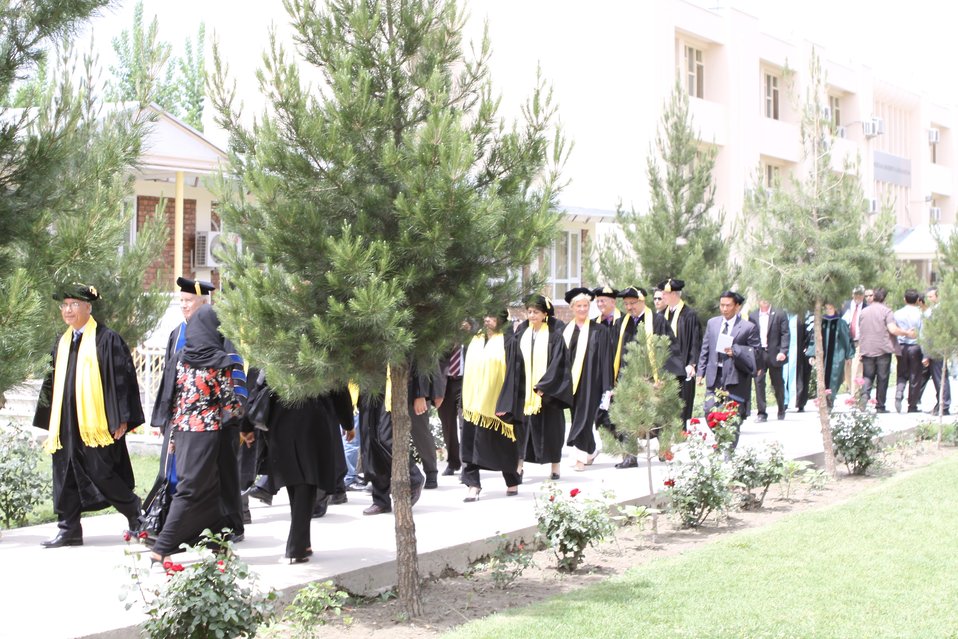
100526 AUAF Graduation 099